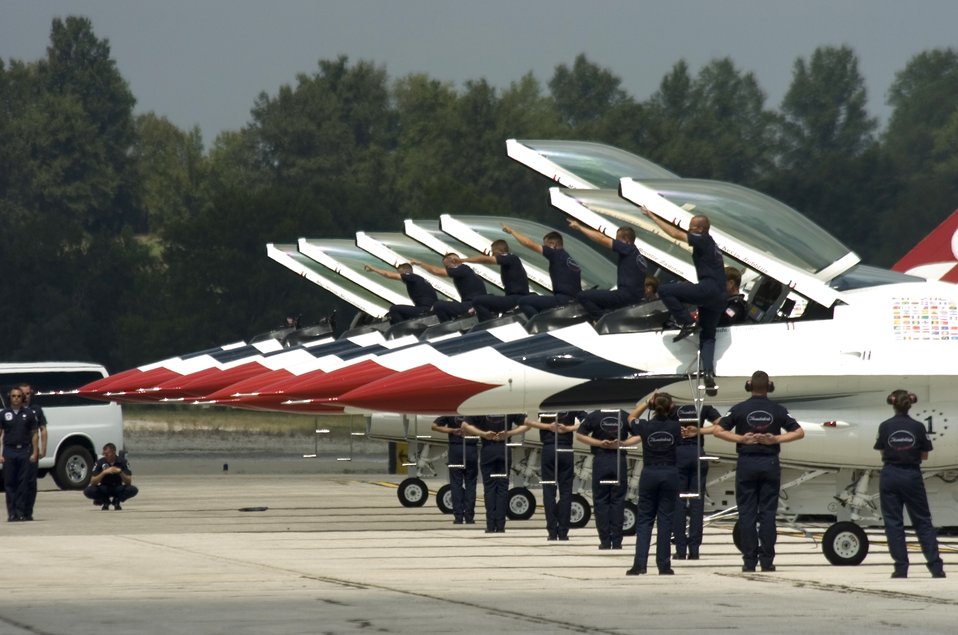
Thunderbirds

Thunderbird crew chiefs signal one minute to engine start prior to a practice show at Scott Air Force Base, Ill., on Aug. 11, 2006.